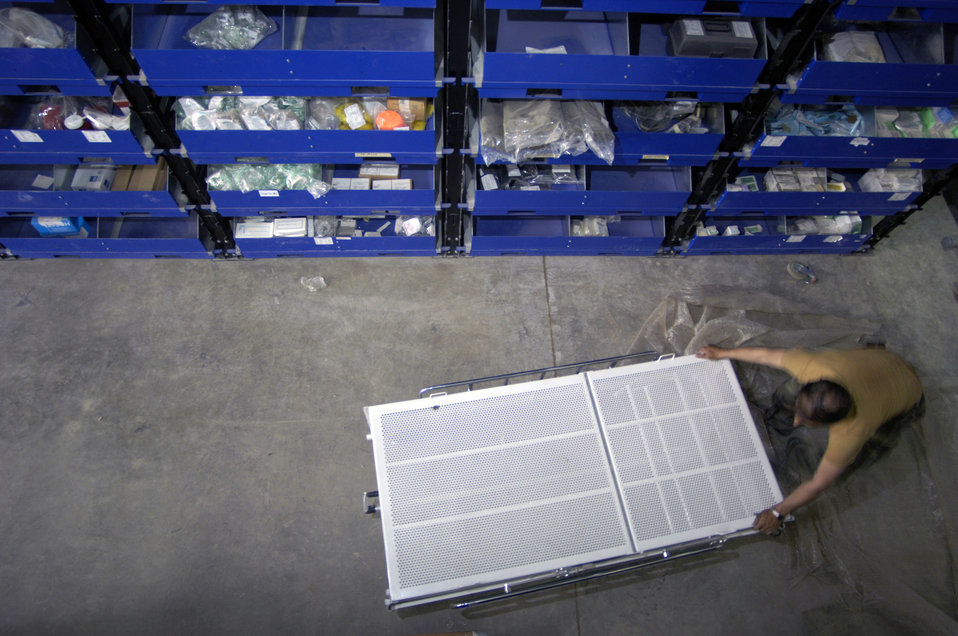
Airmen equip Afghan hospital with supplies, knowledge

Afghan National Army Maj. Abdul Ghafar wheels a hospital bed out of his warehouse Aug. 17 for installation in the newly built $6.5 million, 50-bed ANA hospital at the ANA's Hero Camp, just outside of Kandahar Airfield in southern Afghanistan. Major Ghafar is the ANA's 205th Hero Corps warehouse commander. He is also in charge of all logistical support for the 205th.